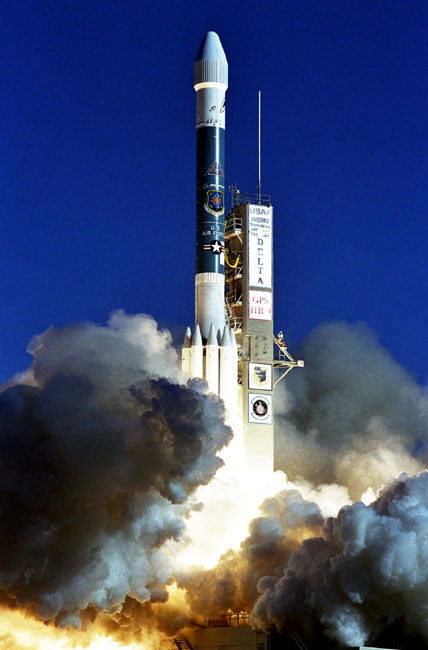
Delta II

CAPE CANAVERAL AIR FORCE STATION, Fla. -- A Delta II, carrying a Global Positioning System satellite, launches from here March 31. The GPS system provides precise 24-hour navigational latitude, longitude, altitude, velocity and precise time information. In the first six days of Operation Iraqi Freedom, more than 80 percent of the munitions that hit several thousand targets were precision-guided. A GPS satellite emits a continuous navigation signal and orbits Earth every 12 hours. The system is so accurate that time can be figured to within 25 billionths of a second, velocity within a fraction of a mile per hour and location to within 16 meters, or about 52 feet.